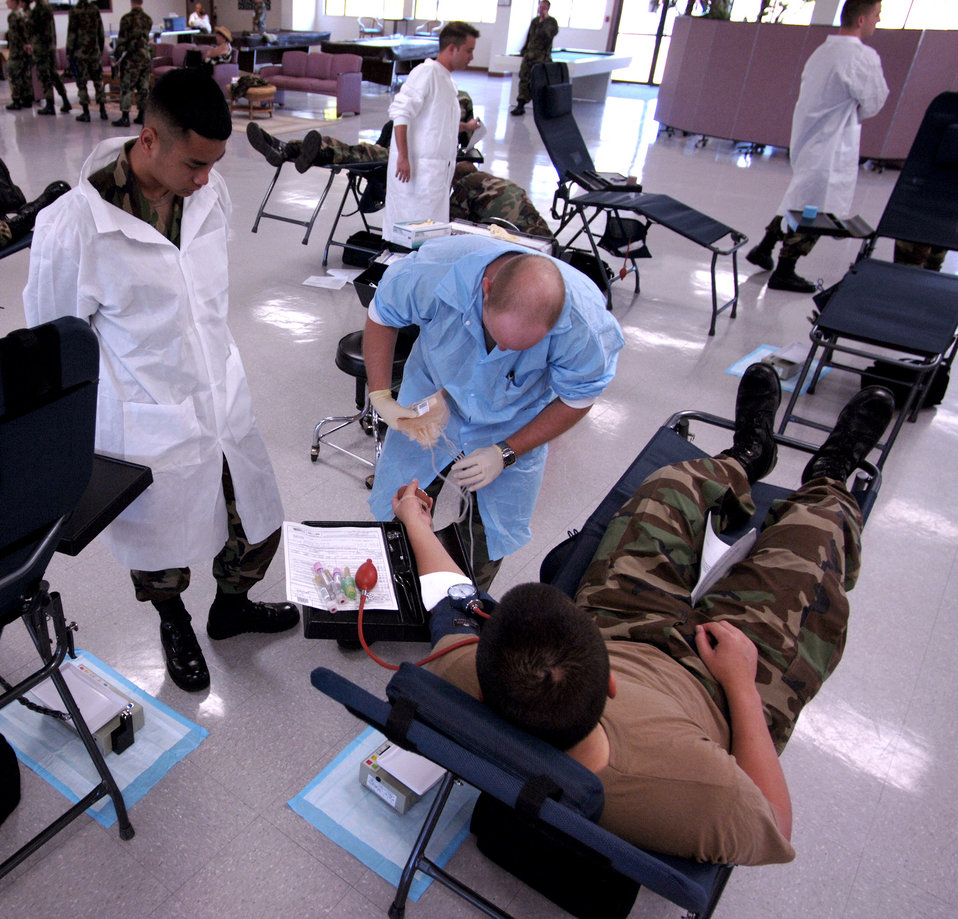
Donating time, blood

HICKAM AIR FORCE BASE, Hawaii (AFPN) -- Spc. Andrew Harris (center) and Pfc. Jonah Lantaya (left), prepare Senior Airman Christopher Wnuk (right) to give blood. The base conducted a base wide blood drive at the Hickam Community Activity Center Oct. 27. Specialist Harris is a medical lab technician from Alpha Company, Tripler Army Medical Center. Private Lantaya is a student in training and Airman Wnuk is assigned to the15th Civil Engineering Squadron here.